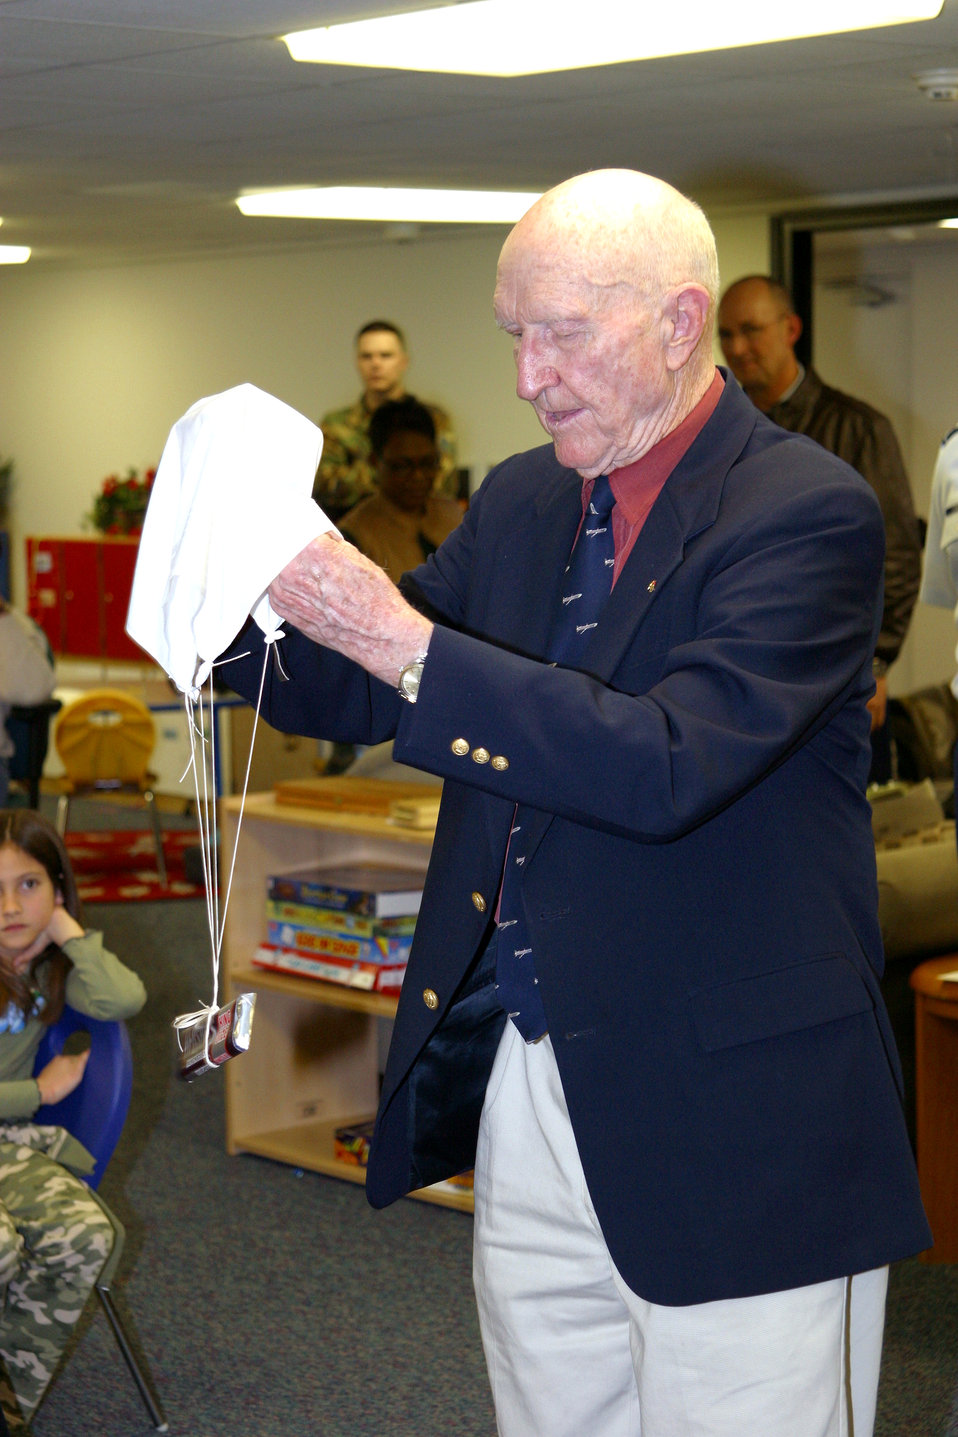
Candy Bomber shares Berlin Airlift stories

Retired Col. Gail S. Halvorsen, also known as the